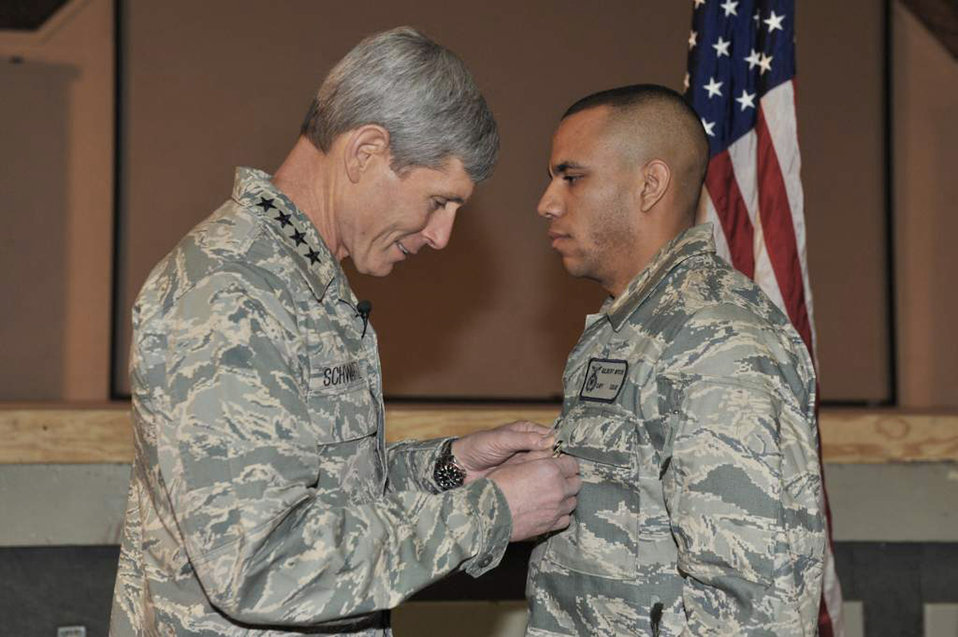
Purple Heart presentation

Air Force Chief of Staff Gen. Norton Schwartz pins a Purple Heart medal on Capt. Gil Wyche, a security forces officer assigned to the 966th Air Expeditionary Squadron, during a ceremony at Bagram Airfield, Afghanistan, on Jan. 19, 2011.